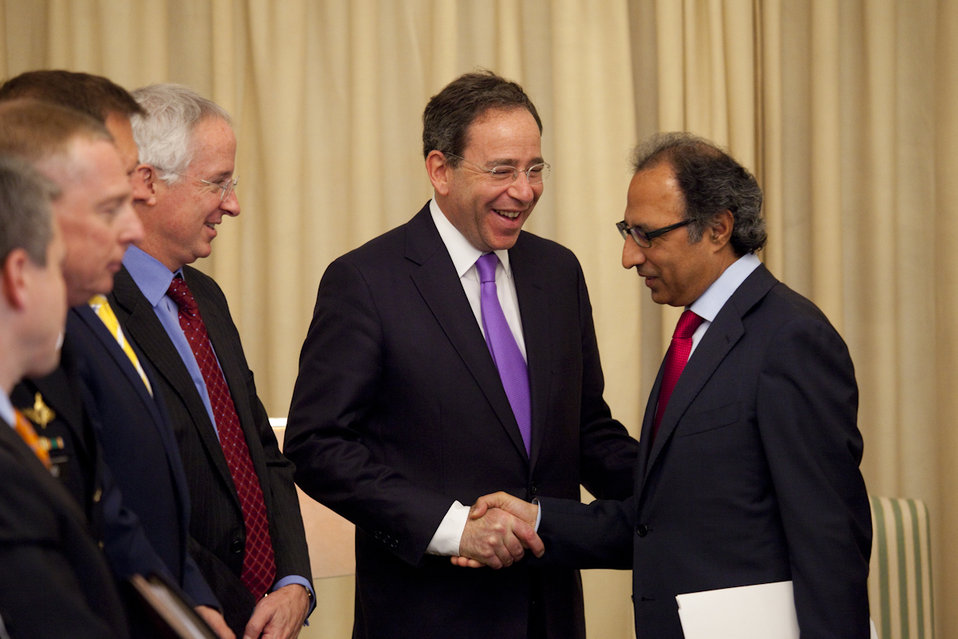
Deputy Secretary Nides Meets With Pakistani Finance Minister Shaikh

U.S. Deputy Secretary of State Thomas Nides meets with Pakistani Finance Minister Hafeez Shaikh in Islamabad, Pakistan, on April 4, 2012.